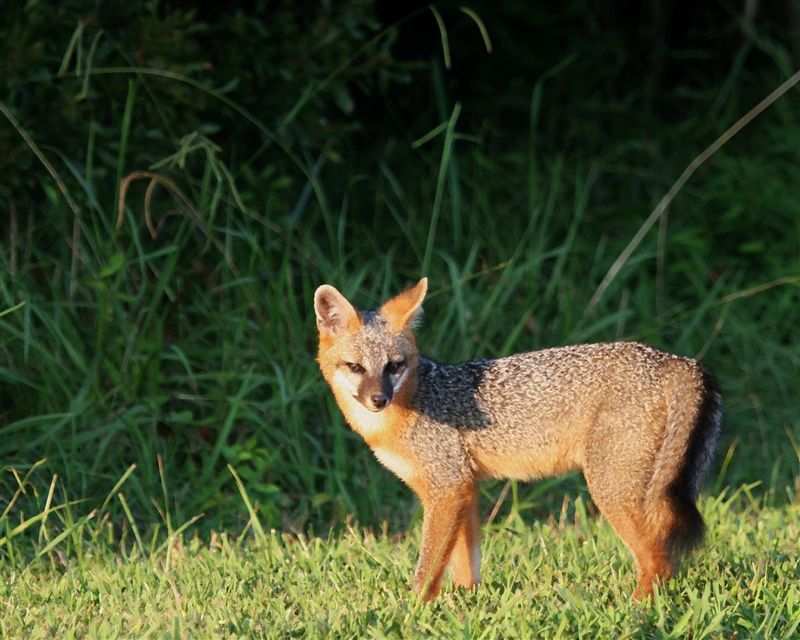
Gray fox at Back Bay National Wildlife Refuge, VA.